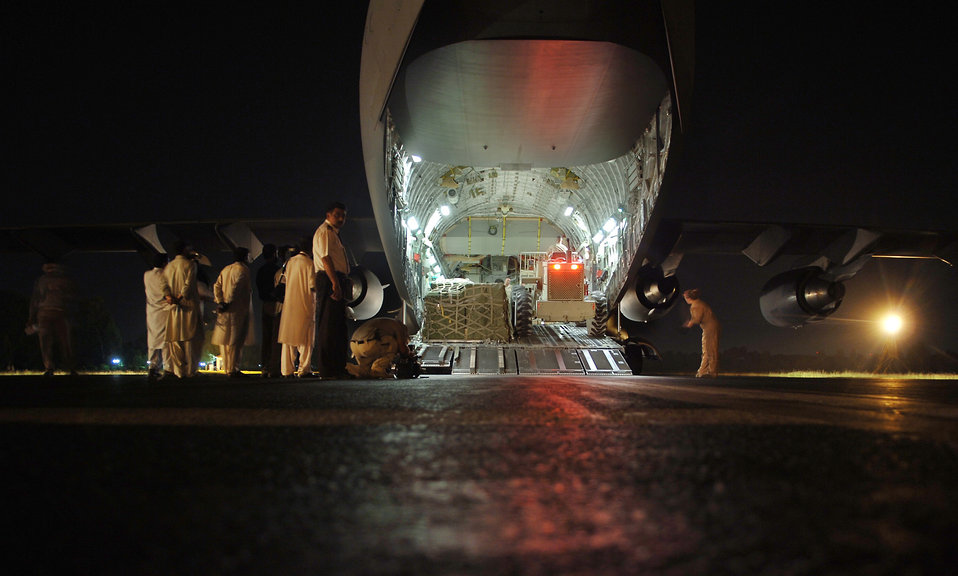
Airmen deliver first relief supplies to Pakistan

ISLAMABAD, Pakistan -- The first relief supplies from the United States are unloaded in here Oct. 9 from a C-17 Globemaster III less than 48 hours after the devastating earthquake that left thousands dead and thousands more injured. The cargo comprised 12 pallets of food, water, medicine and blankets and weighed almost 90,000 pounds. Two aerial port specialists from the 455th Expeditionary Logistics Readiness Squadron at Bagram Air Base, Afghanistan, were also on the flight to coordinate and manage cargo. The C-17 and its crew are from the 7th Airlift Squadron at McChord Air Force Base, Wash.